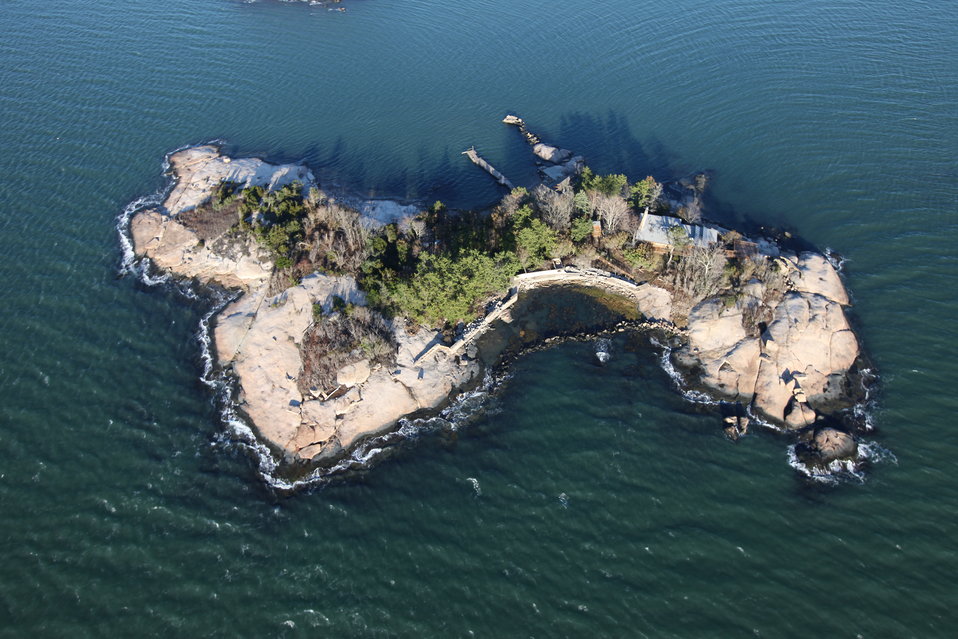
Stewart B. McKinney National Wildlife Refuge-Outer Island (CT)

An aerial view of Outer Island at the Stewart B. McKinney National Wildlife Refuge in the aftermath of storm Sandy.